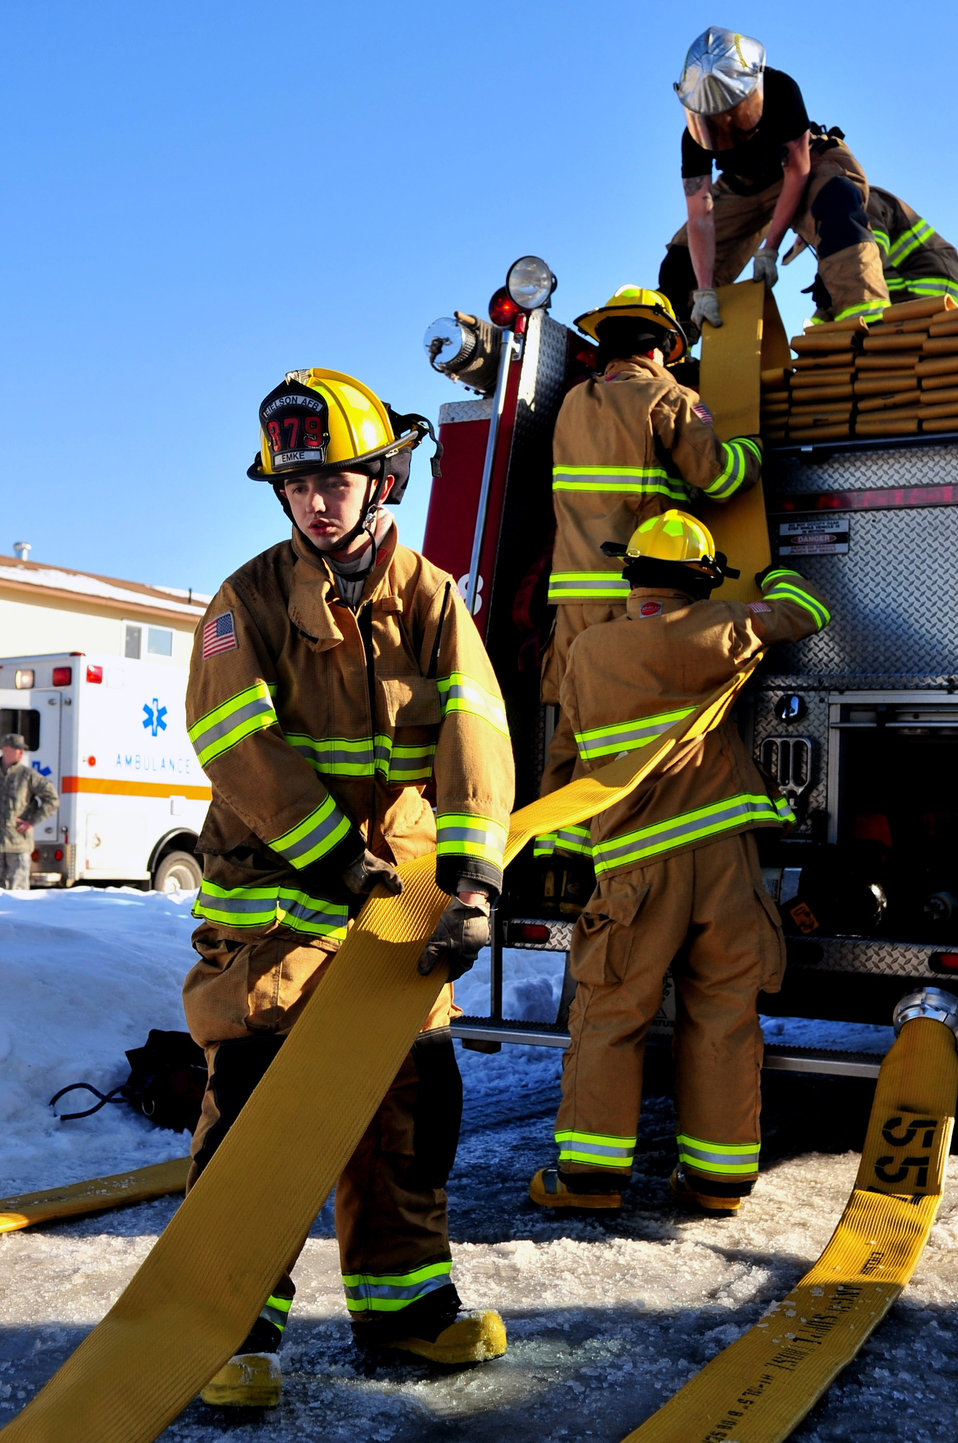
Eielson emergency teams respond to base fire

Airmen from the base fire department roll up fire hoses after responding to a fire at an on-base residence April 6 at Eielson Air Force Base, Alaska. Firefighters responded to the scene within five minutes and helped mitigate property damage.